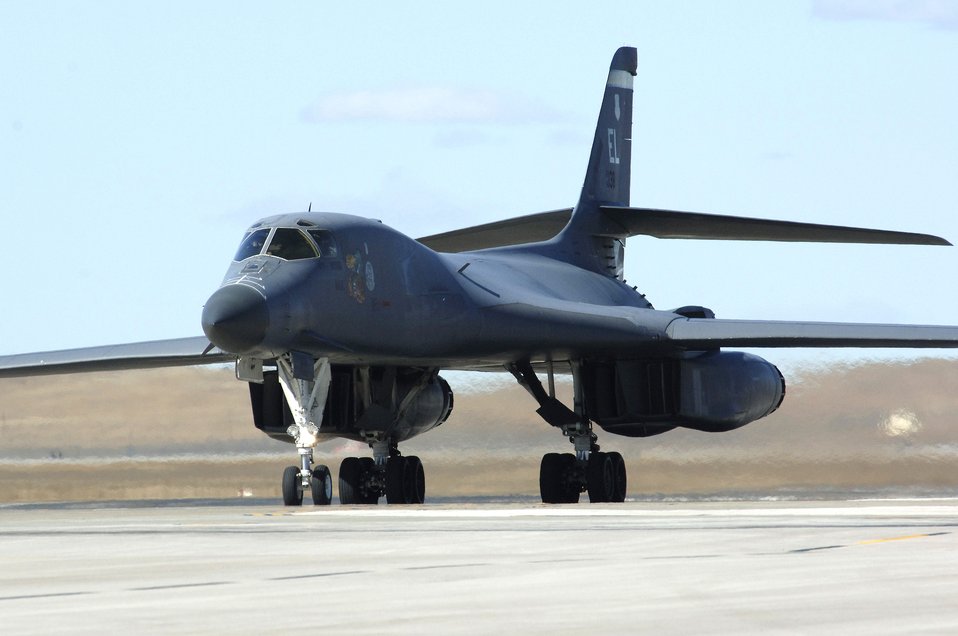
Fine-tuning the fleet

A B-1B Lancer from the 34th Bomb Squadron taxis out to the Ellsworth Air Force Base, S.D., runway March 06 for an operational readiness exercise mission. Base officials are preparing for a scheduled operational readiness inspection later this year.